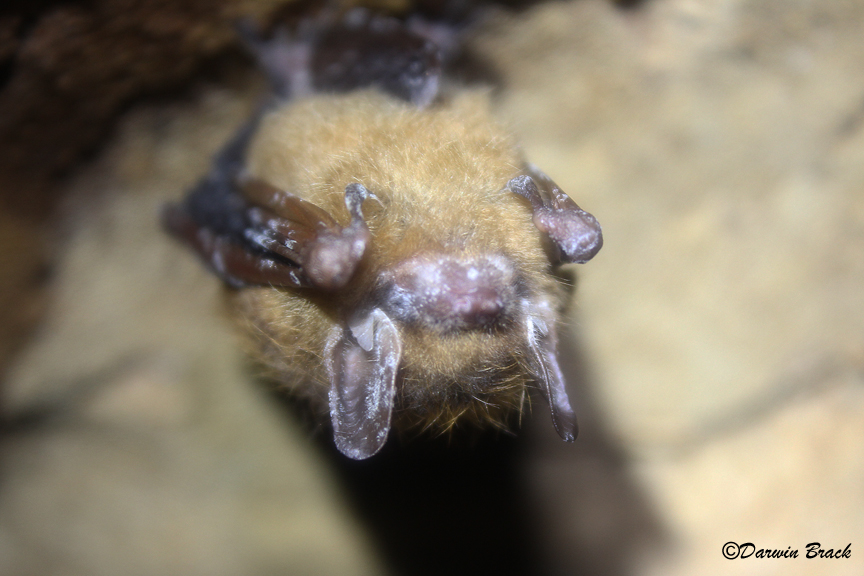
Tri-colored bat with visible WNS symptom